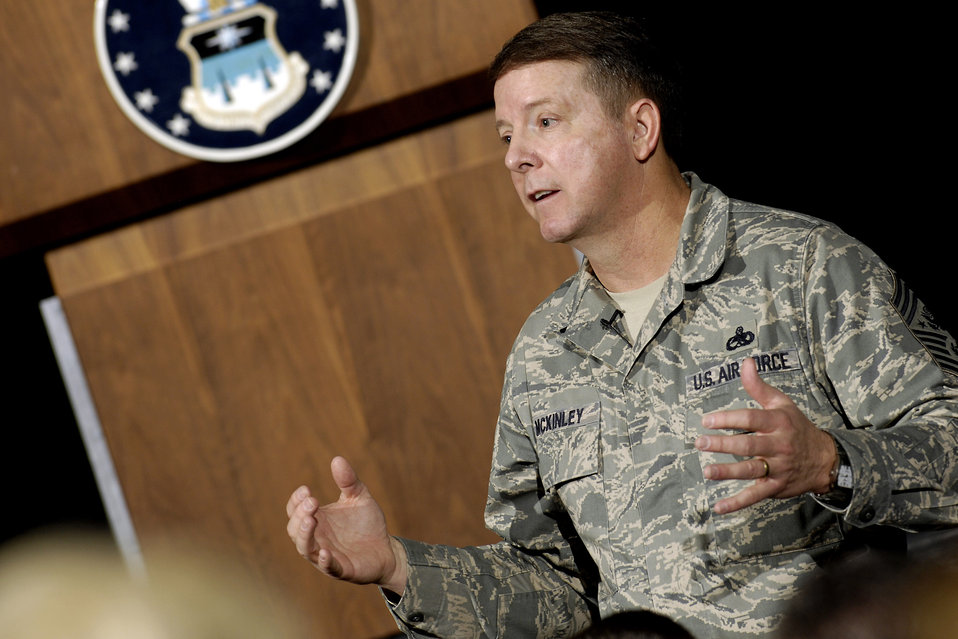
CMSAF visits Academy

Chief Master Sgt. of the Air Force Rodney J. McKinley speaks before an enlisted call held April 10 in Arnold Hall at the U.S. Air Force Academy in Colorado. Chief McKinley visited Academy Airmen to brief on the Air Force's top priorities.